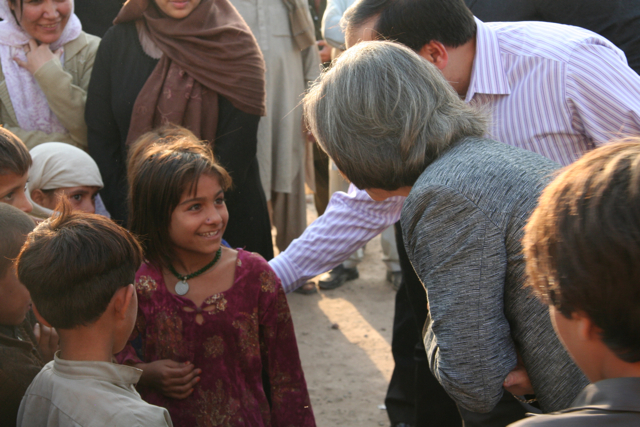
Under Secretary Otero Visits a Refugee Camp

Under Secretary of State for Democracy and Global Affairs Maria Otero visits a refugee camp on the outskirts of Islamabad, Pakistan, on November 1, 2011.